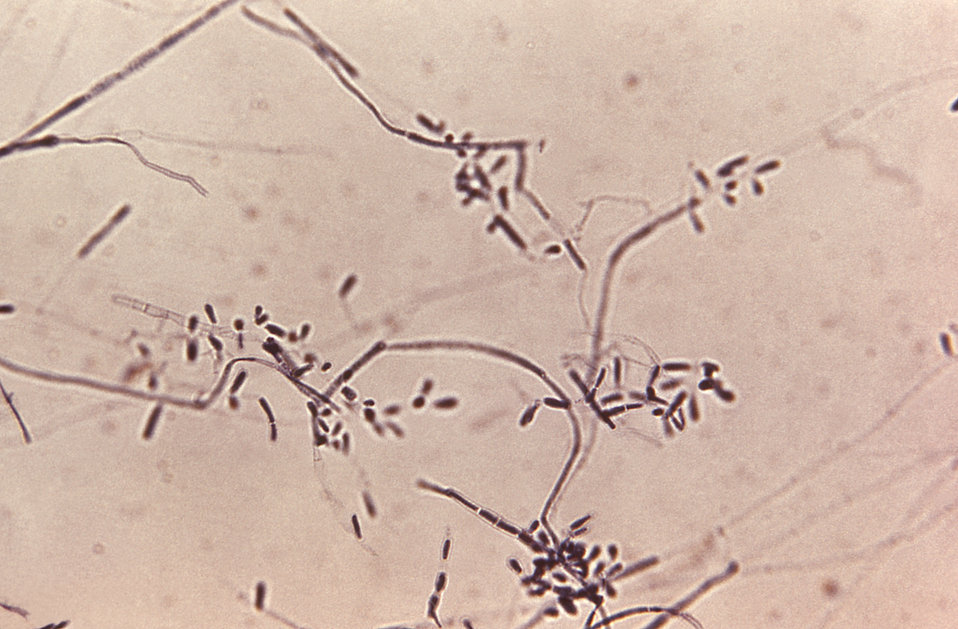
Under a magnification of 200X, this photomicrograph depicts some of the ultrastructural morphology exhibited by the dermatophytic fungus, Trichophyton megninii with particular focus given to the organism's microconidia, which are the organism's reproductive cells, otherwise known as spores.